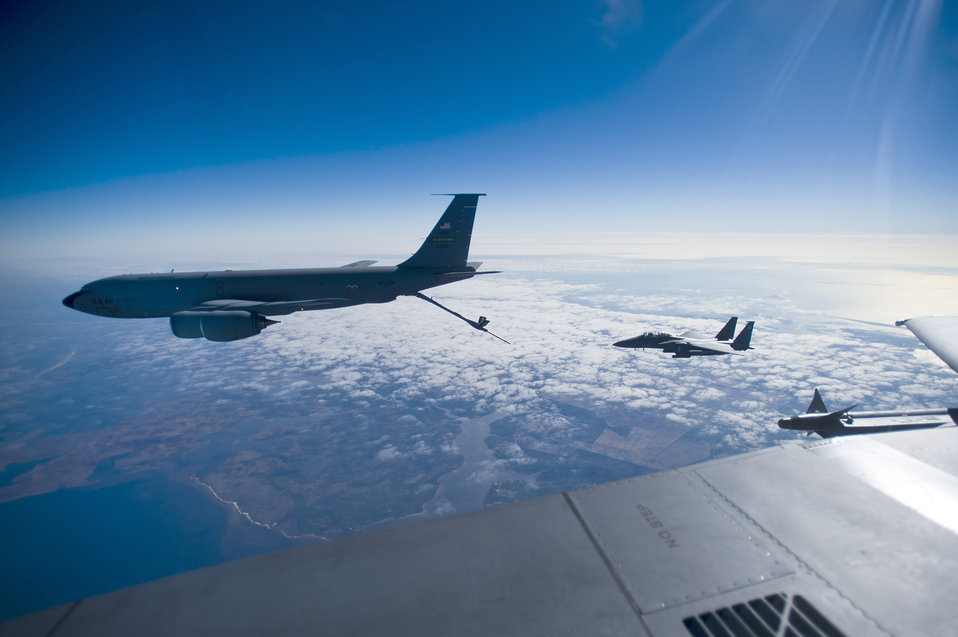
F-15s training mission

The pilot of an F-15E Strike Eagle approaches a KC-135R Stratotanker during a training mission Dec. 17, 2010, over North Carolina. The F-15E is from the 335th Fighter Squadron from Seymour Johnson Air Force Base, N.C.